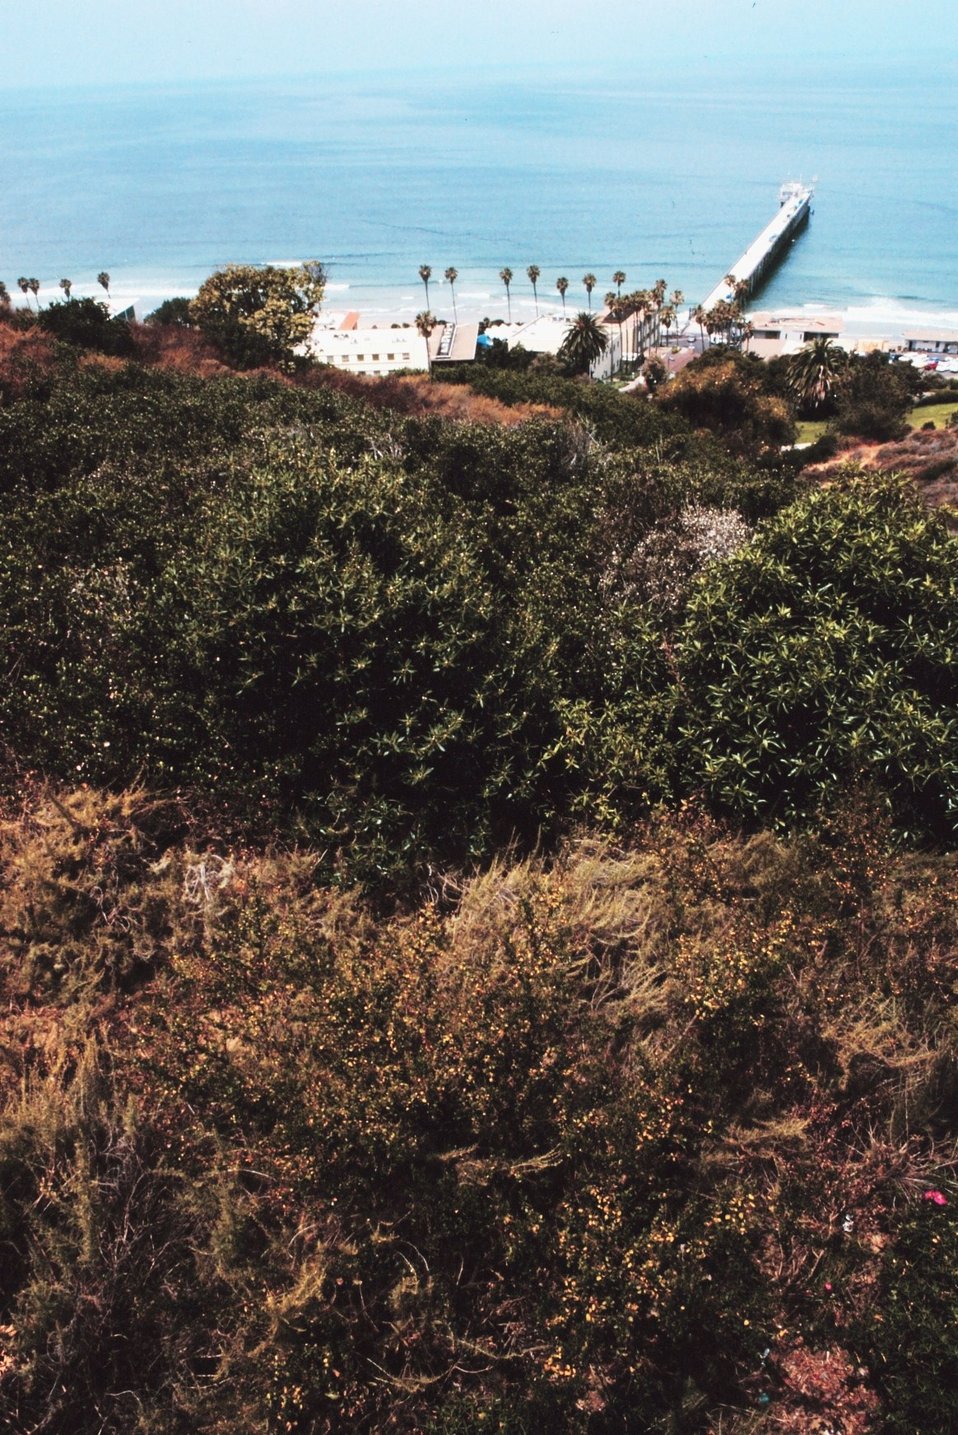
Looking down from the hill towards the Scripps Research Pier